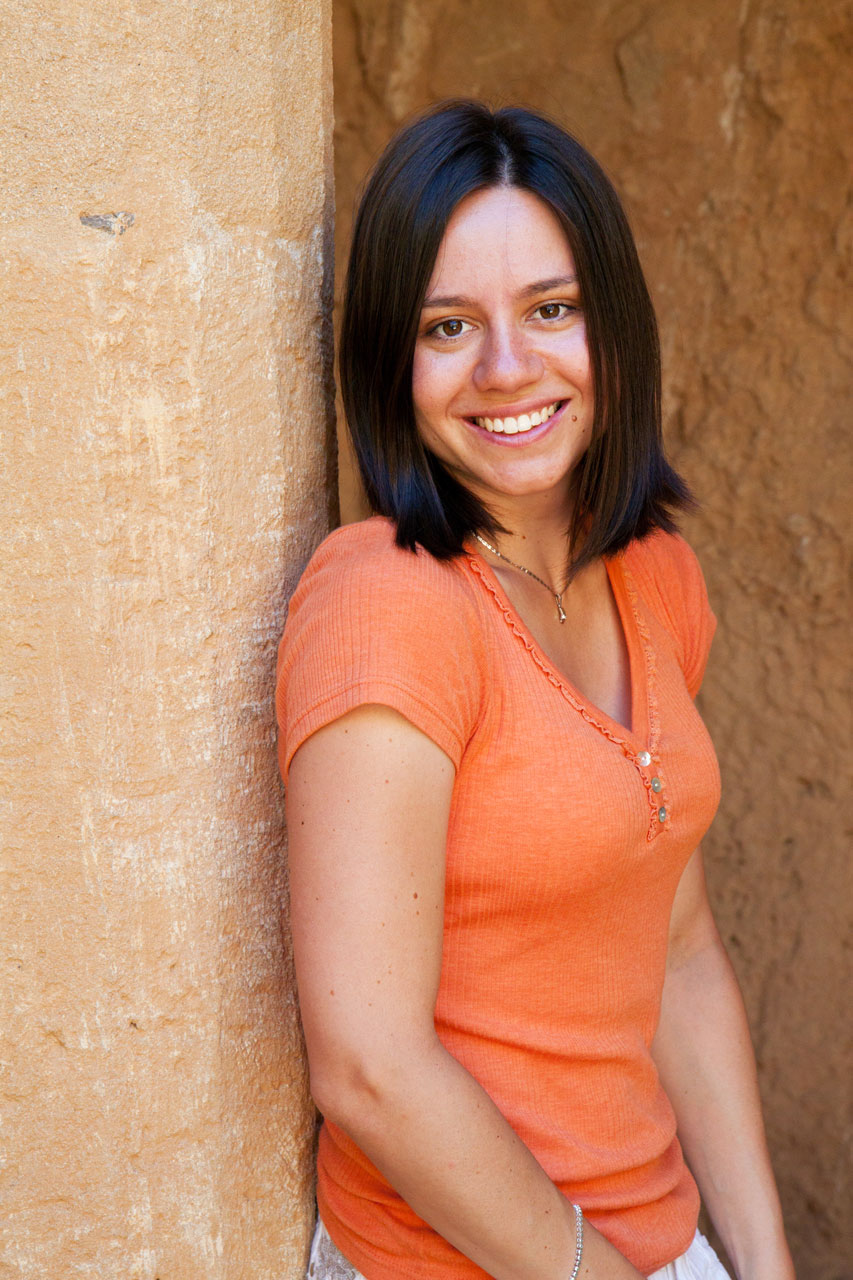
Young woman in orange

Portrait of smiling young woman in orange with sandstone background.